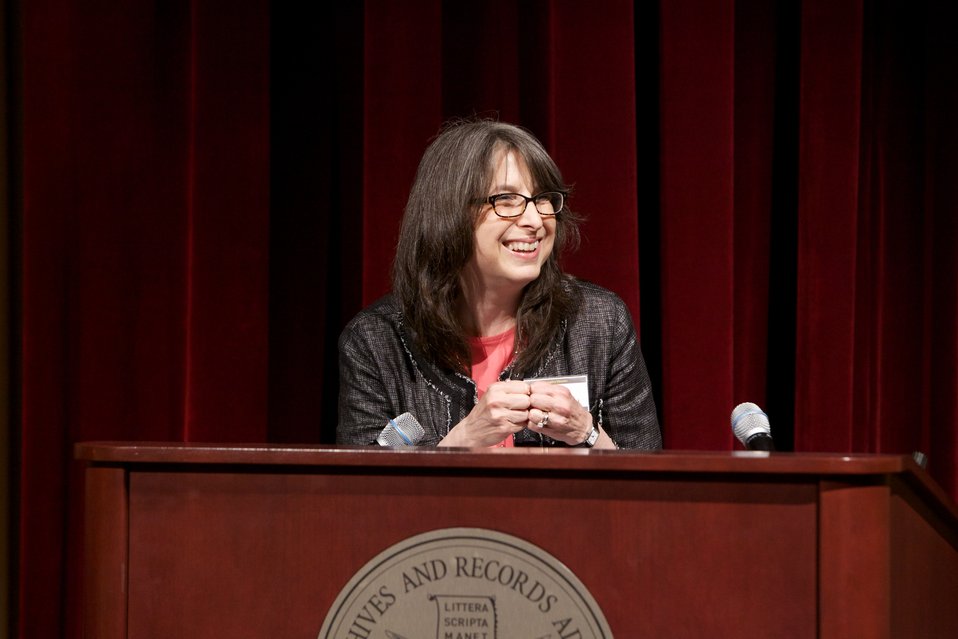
A Nation of Immigrants: How They Shaped America